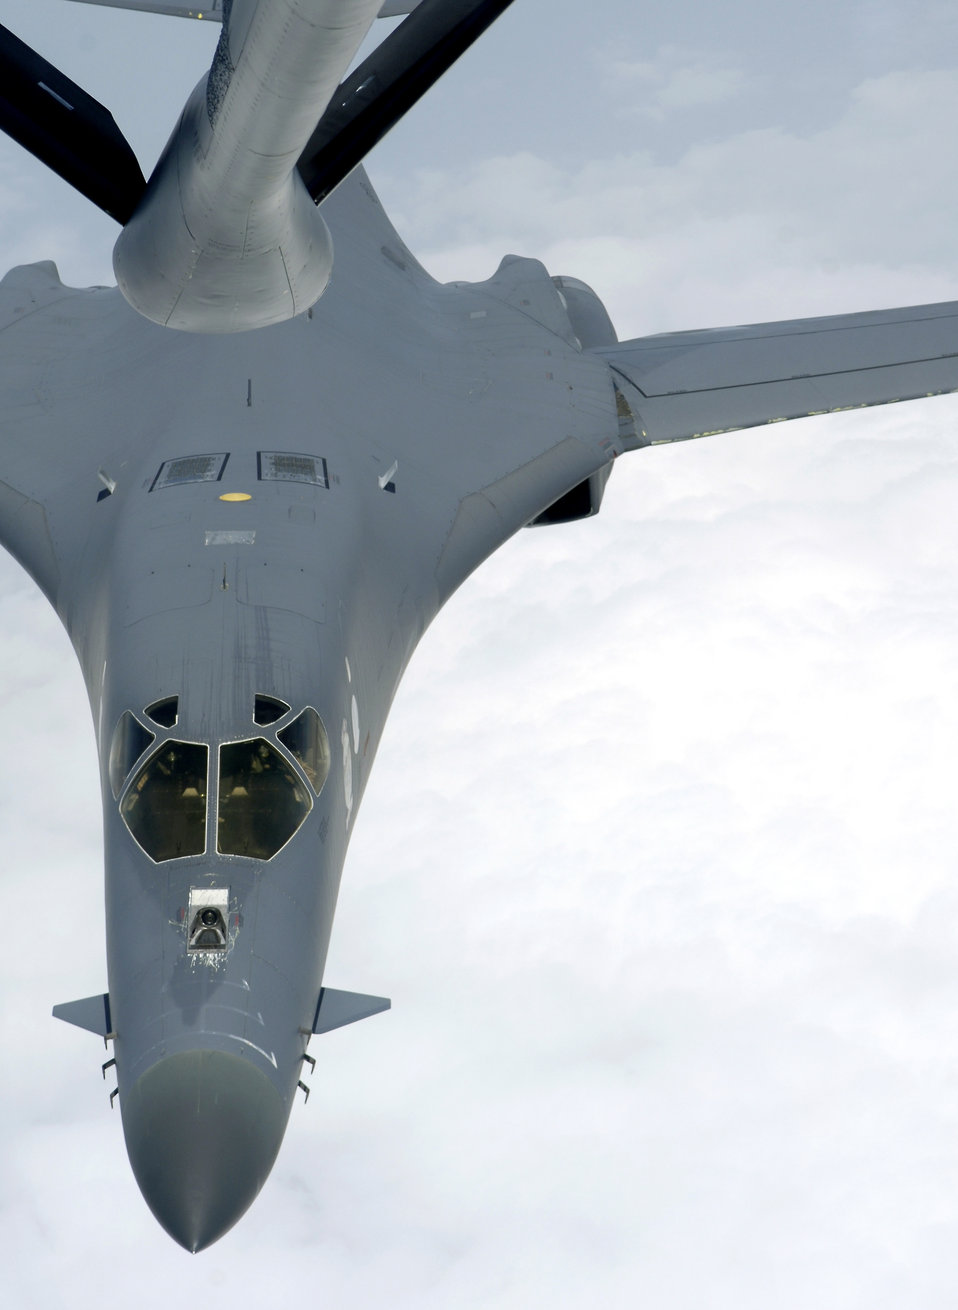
KC-135 bringing fuel to fight

A B-1B Lancer prepares to connect with a KC-135 Stratotanker refueling boom over the Indian Ocean on Friday, July 7. The B-1 was flying a close-air support mission in support of Operation Enduring Freedom. The B-1 and the KC-135 are stationed at a forward operating base in Southwest Asia.